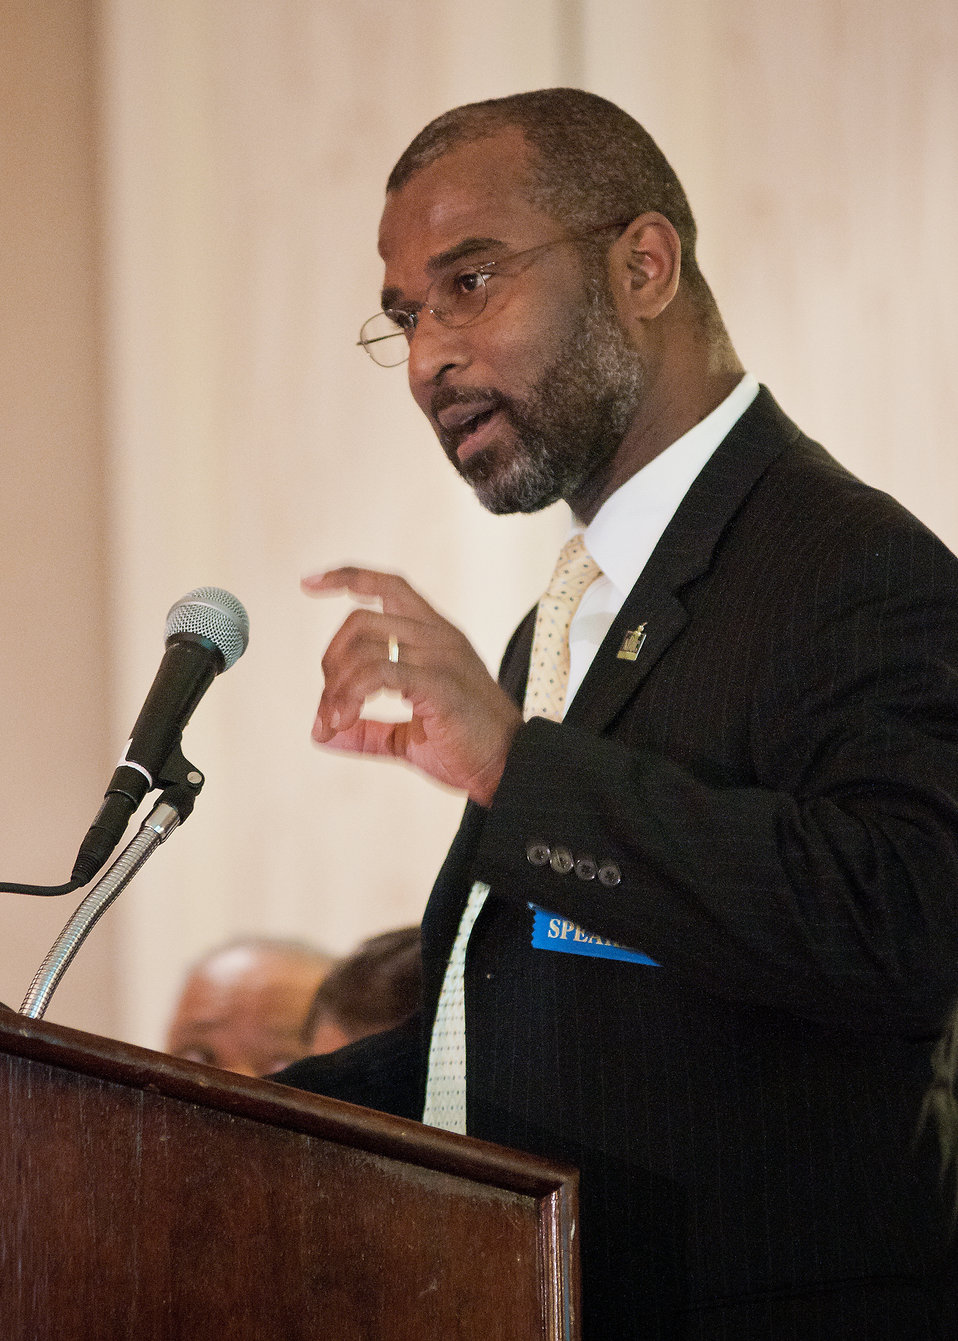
Dewayne Goldmon, Director, Stakeholder Relations, Monsanto Company and a producer from Pine Bluff, Arkansas spoke during the breakout session Innovative Solutions for Meeting the Challenges of Small and Disadvantaged Farmers at the 2012 Agricultural Outlook Forum, “Moving Agriculture Forward, Growing, Innovating and Celebrating 150 Years” held at the Crystal gateway Marriott Hotel Arlington, Virginia, Friday, February 24, 2012.